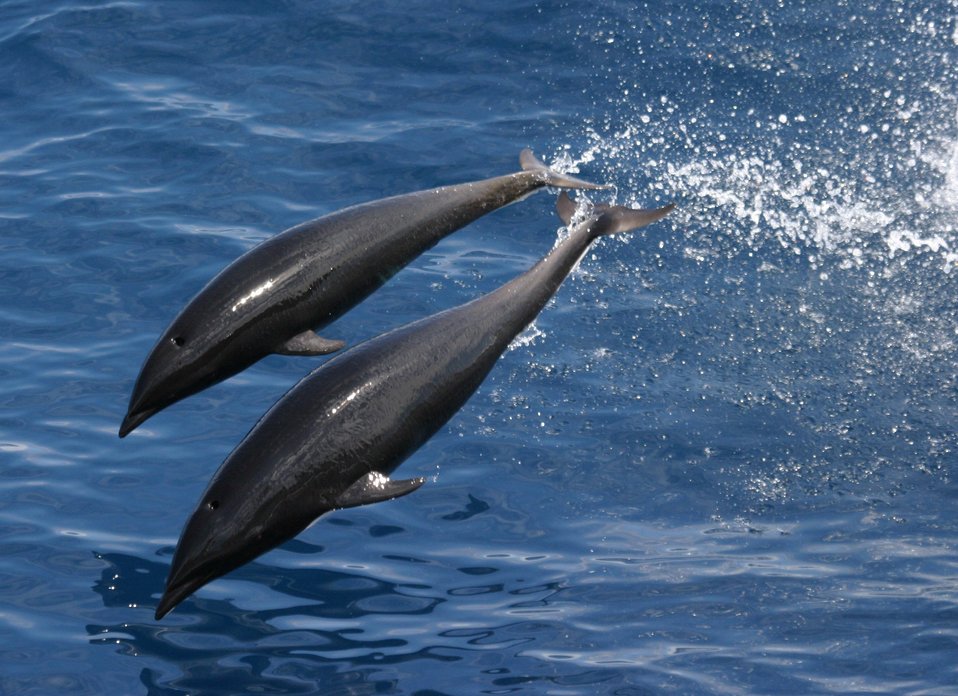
Northern right whale dolphin. The lack of a dorsal fin makes identification of this species much easier.